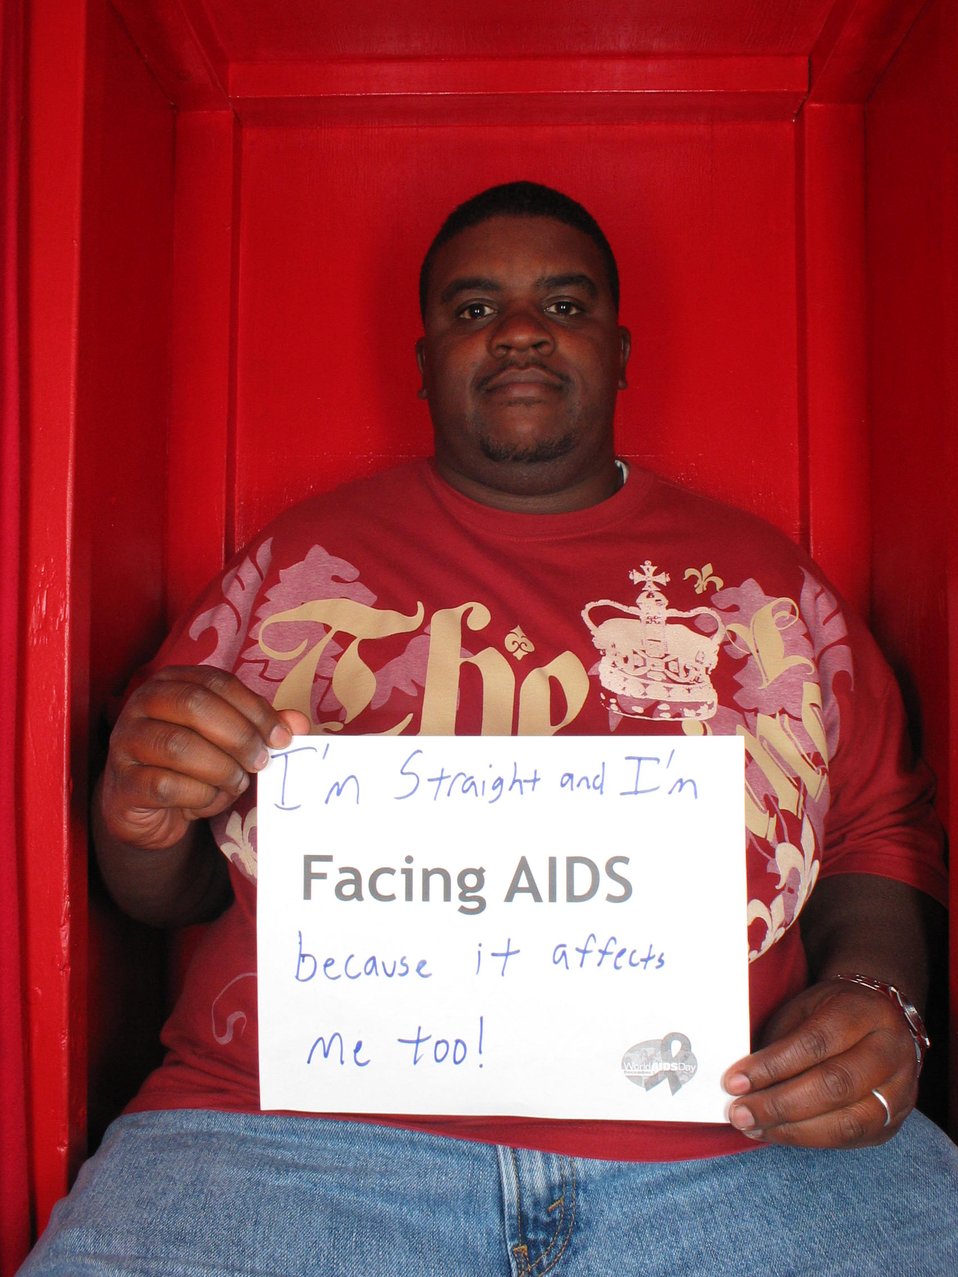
I am straight and I'm Facing AIDS because it affects me too!